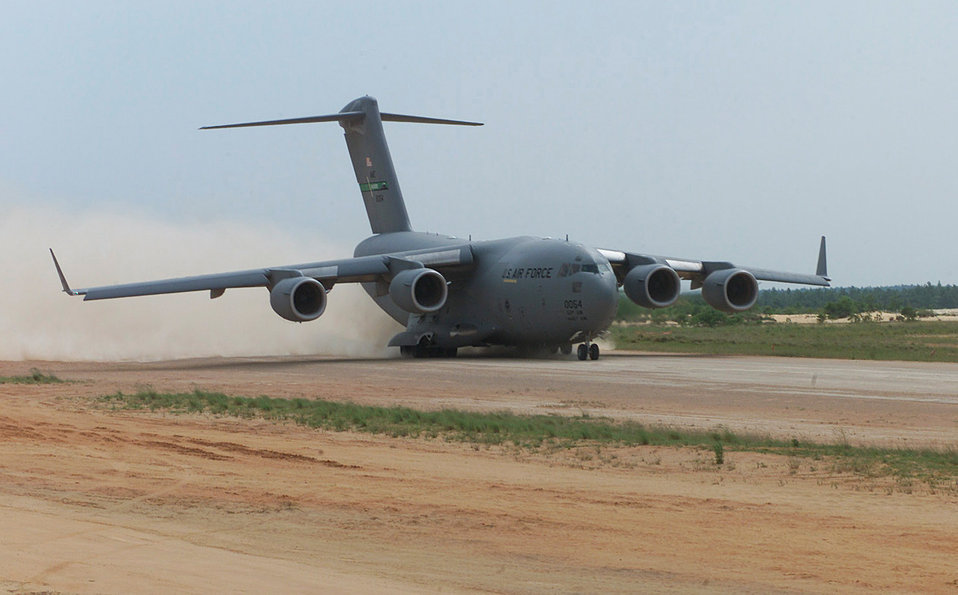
Assault landing

FORT BRAGG, N.C. -- A C-17 Globemaster III, 446th Airlift Wing, McChord Air Force Base, Wash., conducts an assult landing at Holland landing zone here. During Rodeo 2000, teams from all over the world will compete in areas including airdrop, aerial refueling, aircraft navigation, special tactics, short field landings, cargo loading, engine running on/offloads, aeromedical evacuations and security forces operations.